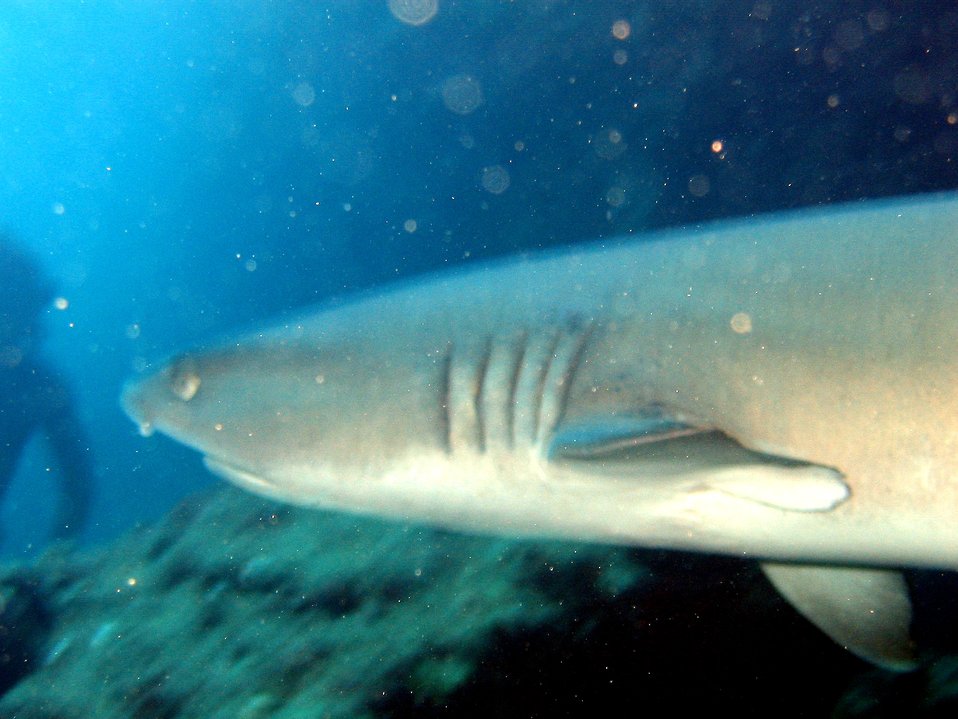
A white-tip shark (Triaenodon obesus) up close and personal. Mano lalakea as called in the Hawaiian language.